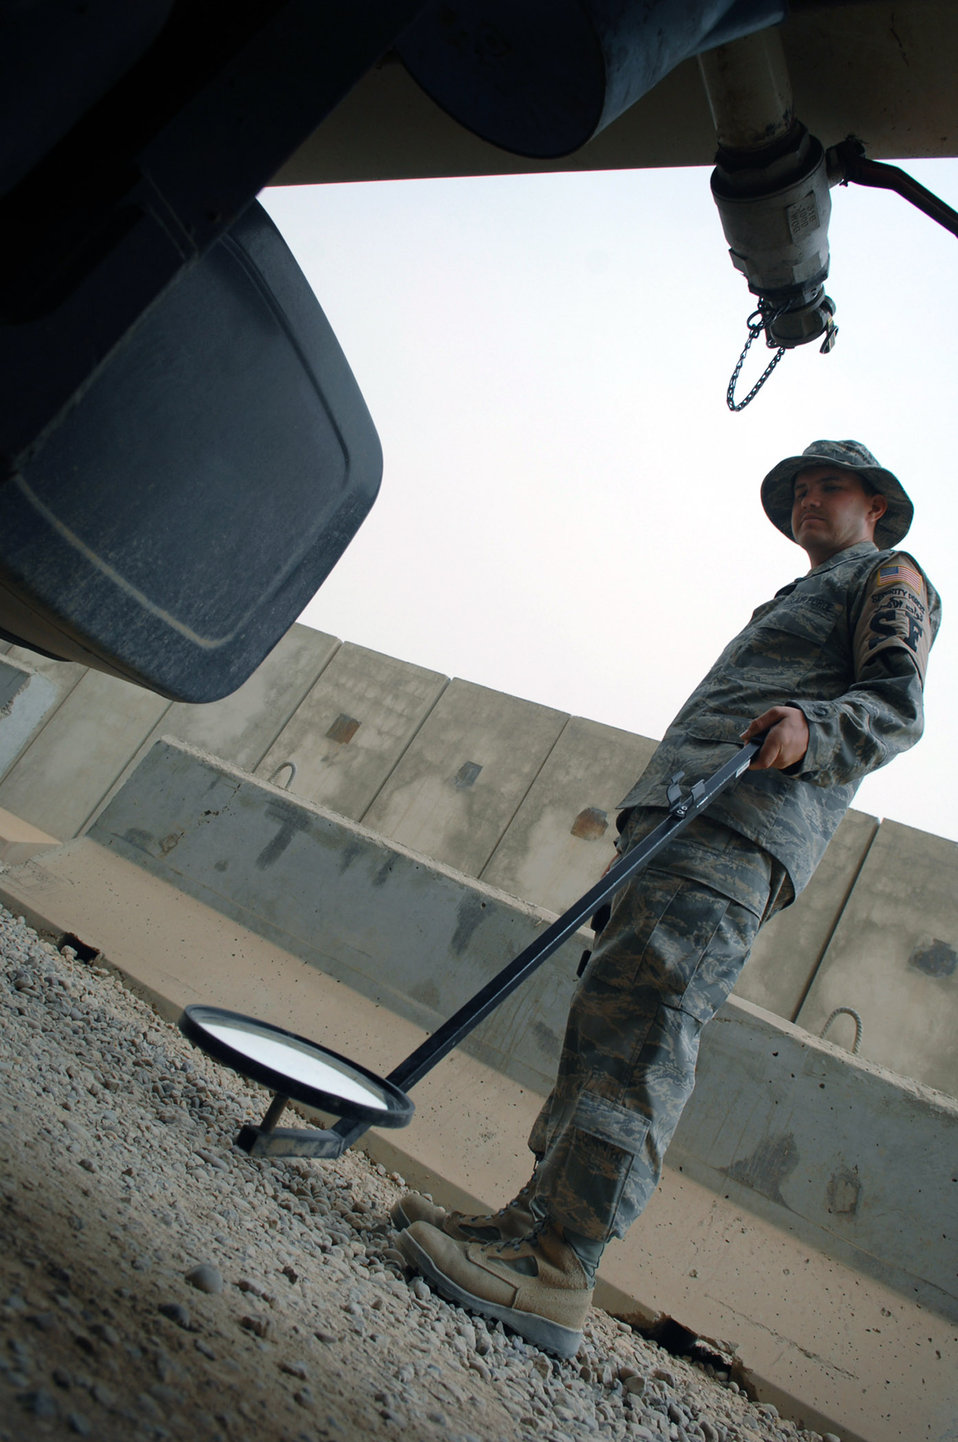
Inspecting and protecting

Senior Airman Branden Hall looks at the undercarriage of a truck passing through a gate May 17 at Balad Air Base, Iraq. Preventing unauthorized items from entering the base via vehicles or personnel ensures the safety of those assigned to the base. Airman Hall is a 332nd Expeditionary Security Forces Squadron force protection inspector deployed from Luke Air Force Base, Ariz.